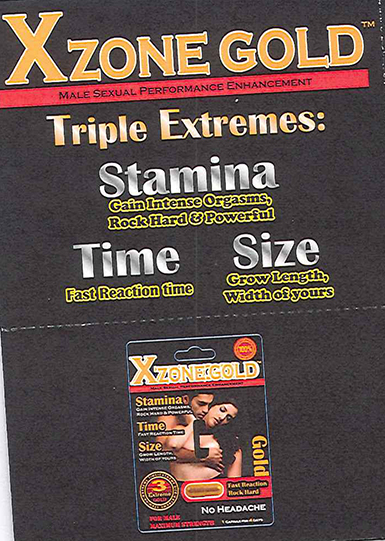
RECALLED – Dietary Supplement

April 1, 2014 – Product Recall – Nova Products, Inc. Issues Voluntary Nationwide Recall of Dietary Supplements with Undeclared Active Pharmaceutical Ingredients.